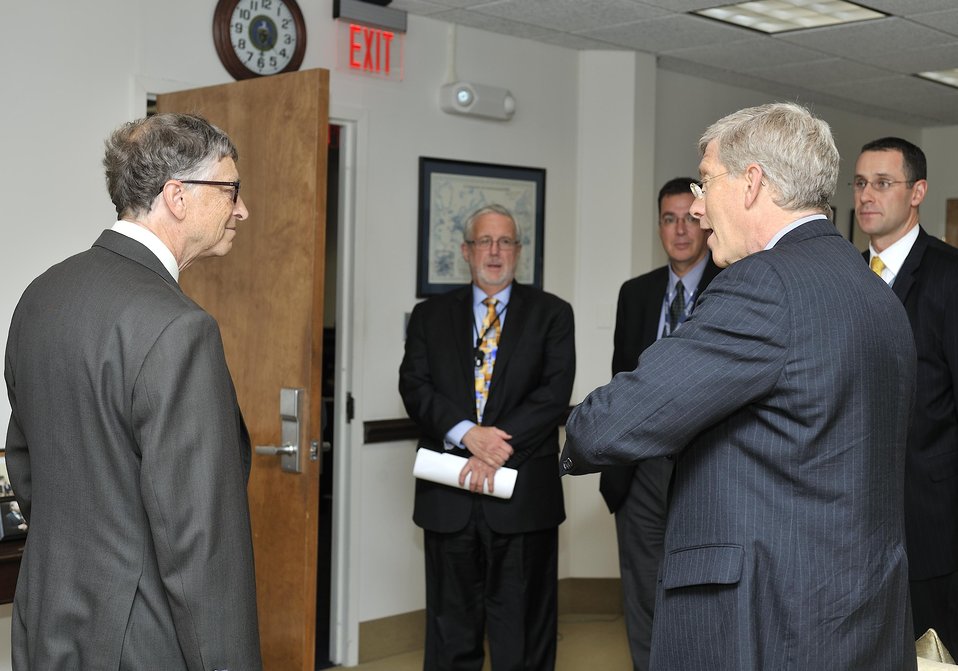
Ken Shipp/DOE Photo